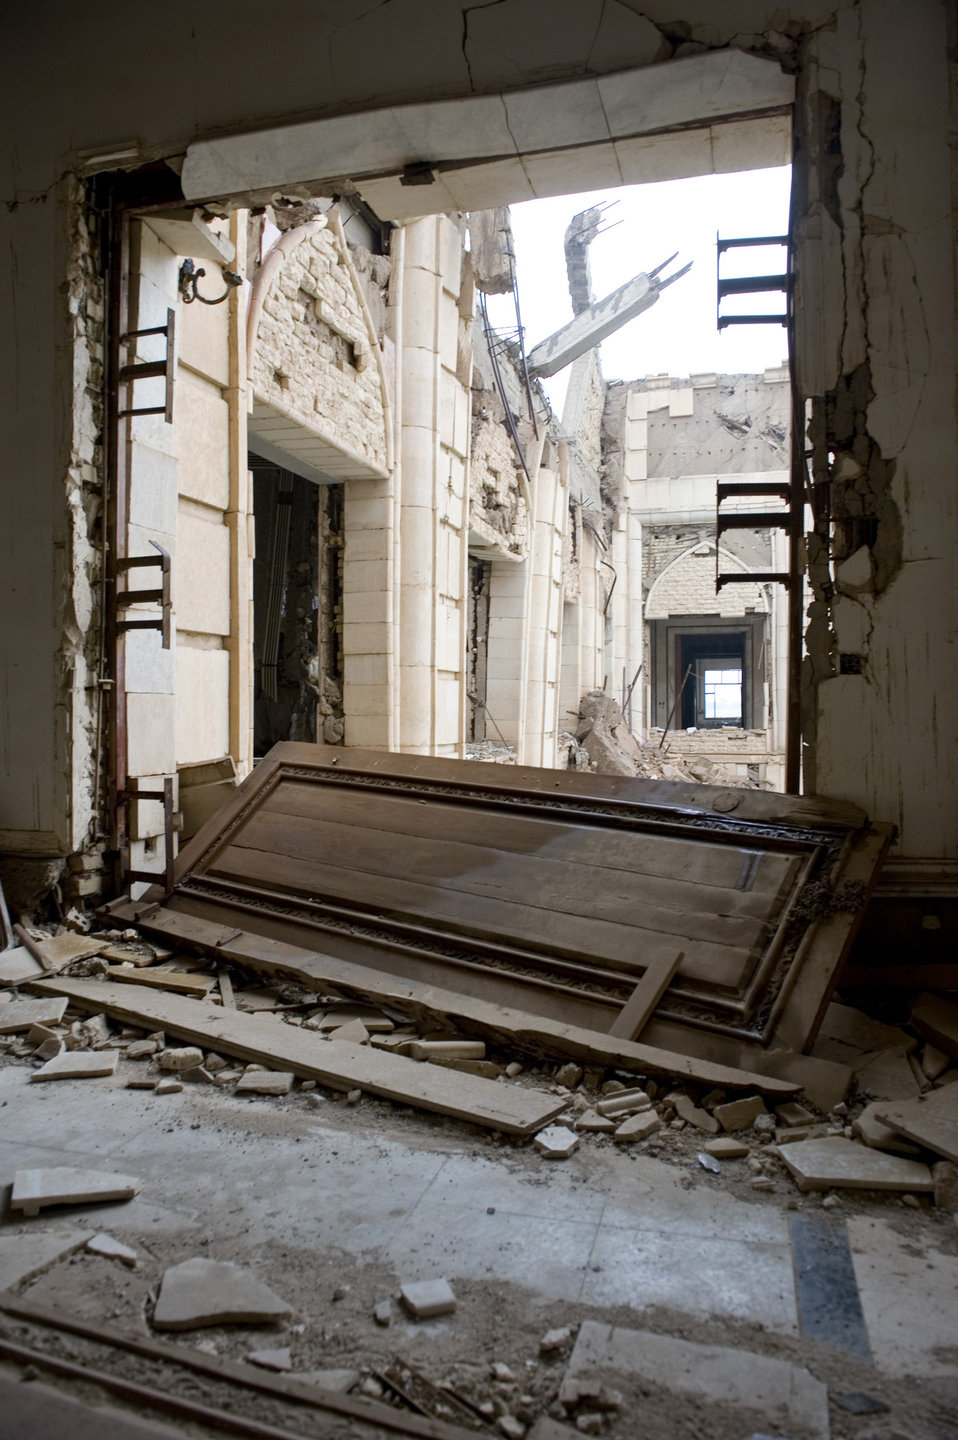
Chapel staff bolsters morale, mission focus from a unique perspective

The remnants of the Baath Party House lie in disarray Jan. 29, 2011, in Baghdad, Iraq. The house was one of the first buildings hit during Operation Iraqi Freedom because intelligence sources believed Saddam Hussein was watching a movie here at the time.